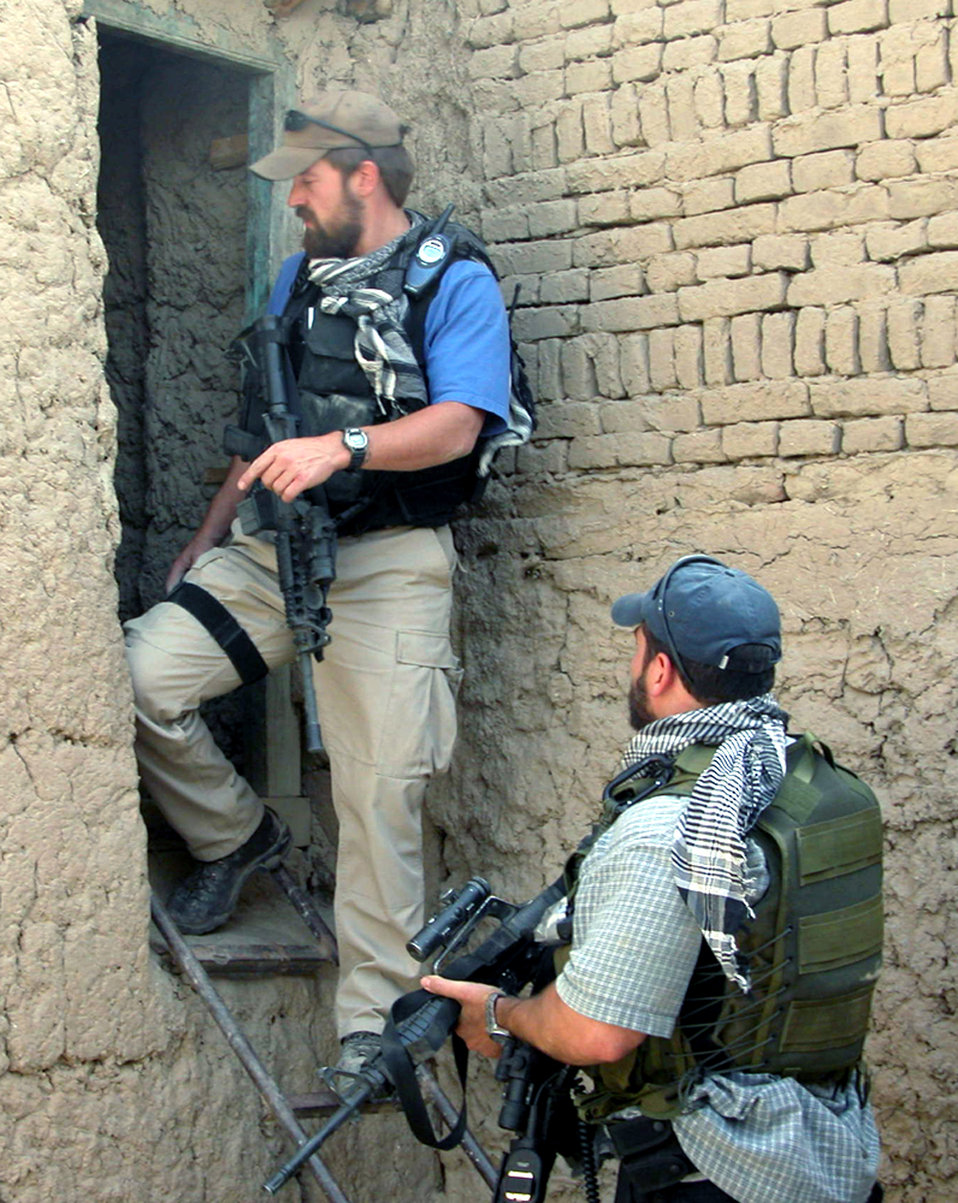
Keeping Bagram safe

BAGRAM AIR BASE, Afghanistan -- Special Agents Isaac Suydam (left) and Jeff Rutherford search for a weapons cache inside a false wall. They are assigned to the Air Force Office of Special Investigation detachment here.